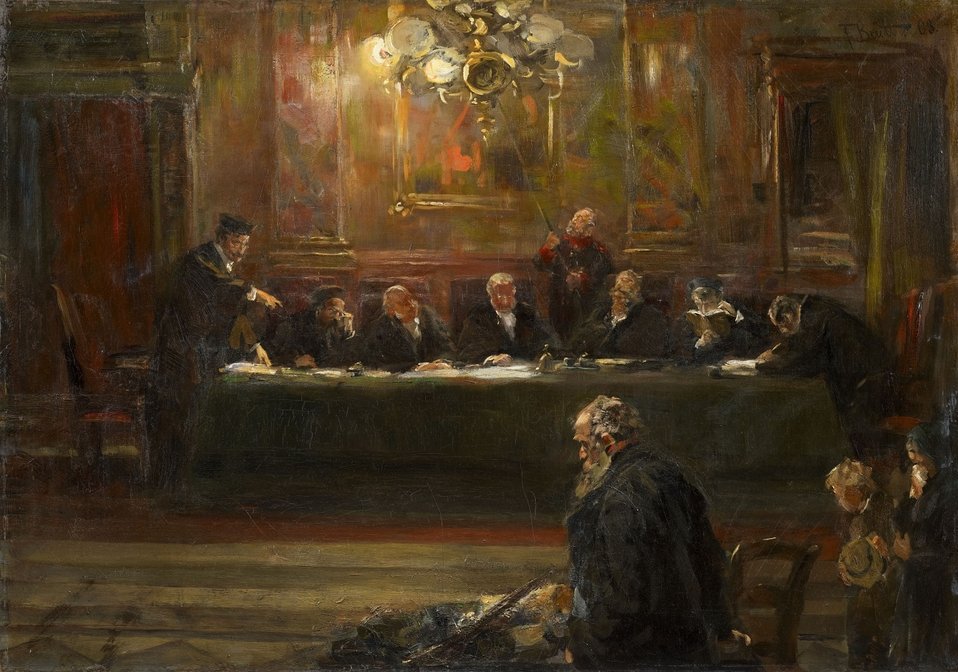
Vor den Richtern. Öl auf Leinwand. 80 x 115 cm. Signiert und datiert oben rechts: F. Brütt. 03